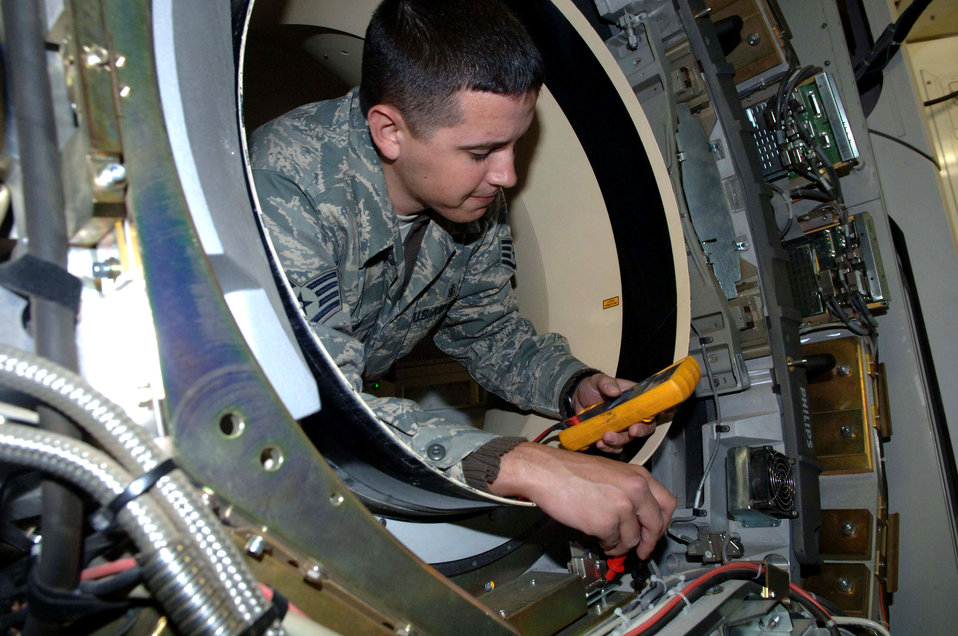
Everything checks out

Staff Sgt. Orlando Ortega, a biomedical equipment technician, uses a multimeter to check the voltage readings inside a computerized tomography machine Dec. 31. The CT machine provides physicians with a three-dimensional internal image of a patient taken from a series of angles.